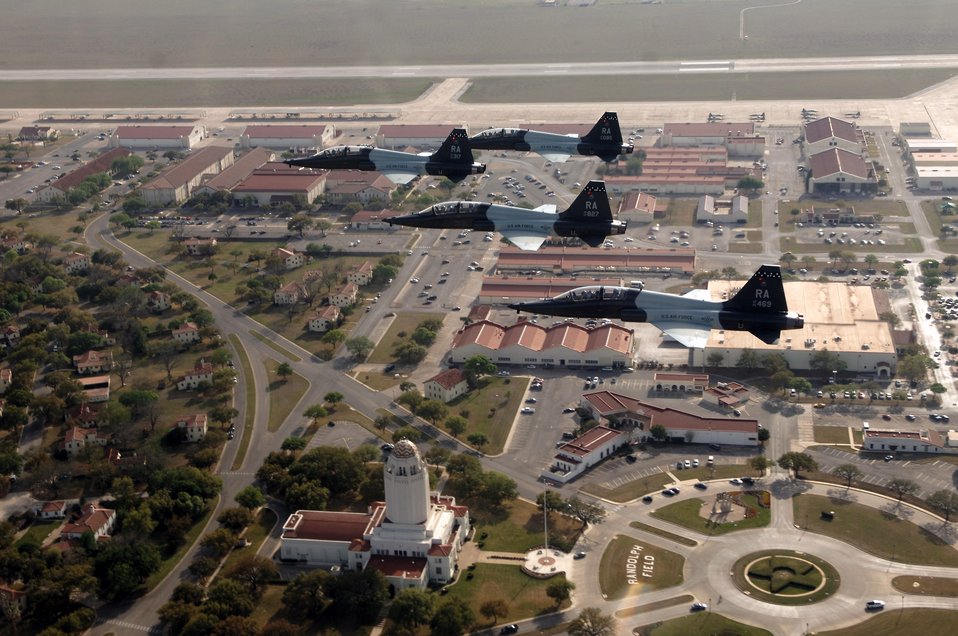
T-38 celebrates 50 years of service

Four T-38 Talons fly over Randolph Air Force Base, Texas. The T-38 completed its first flight 50 years ago on April 10, 1959. In five decades of service, more than 75,000 pilots have flown in a T-38 while earning their wings.